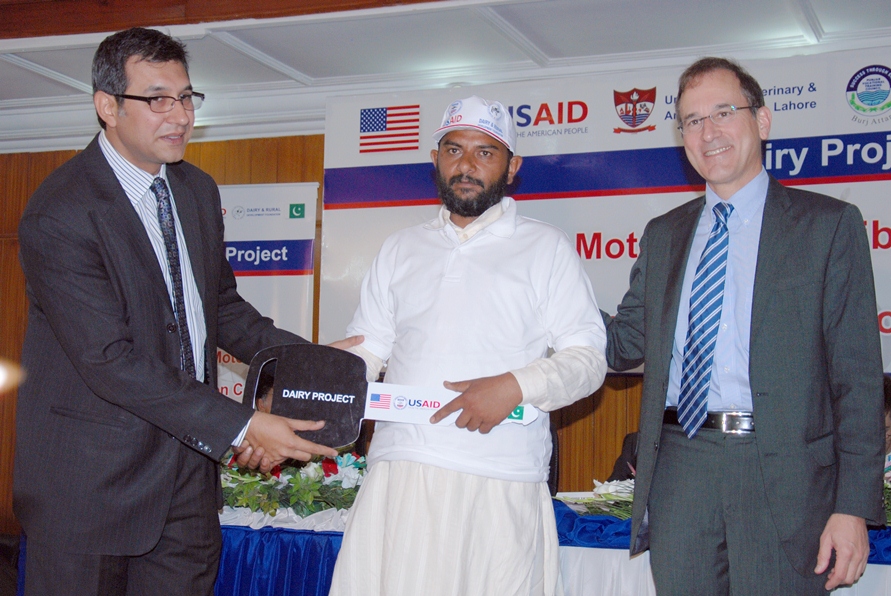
Mr. Richard A. Albright (Coordinator of Development Assistance) presenting motorcycle keys to a successfull AI technician